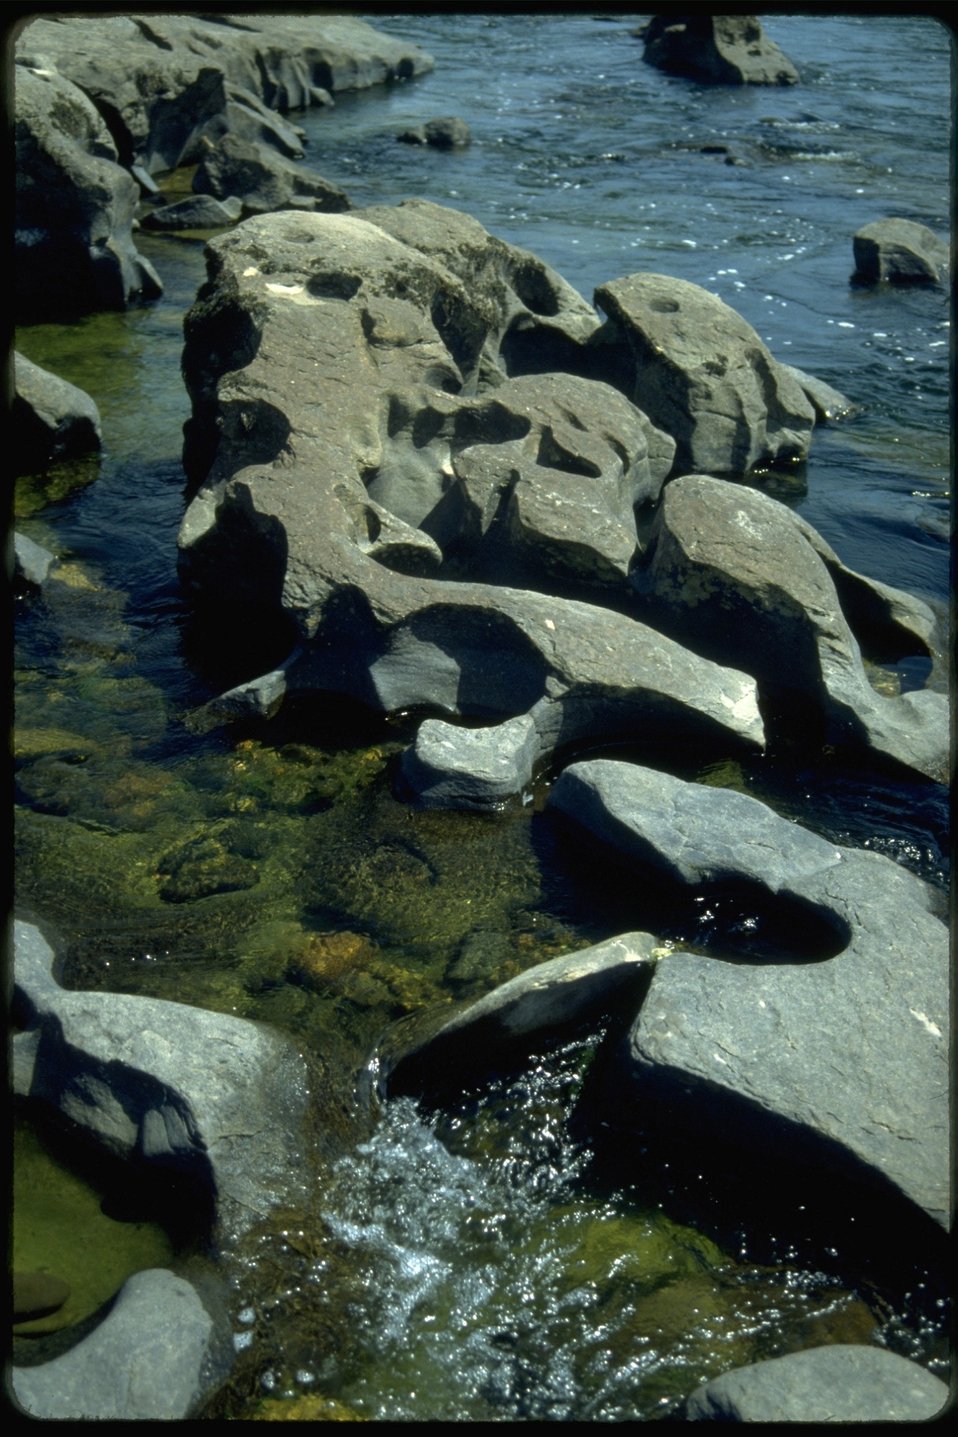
A small branch of a larger river.